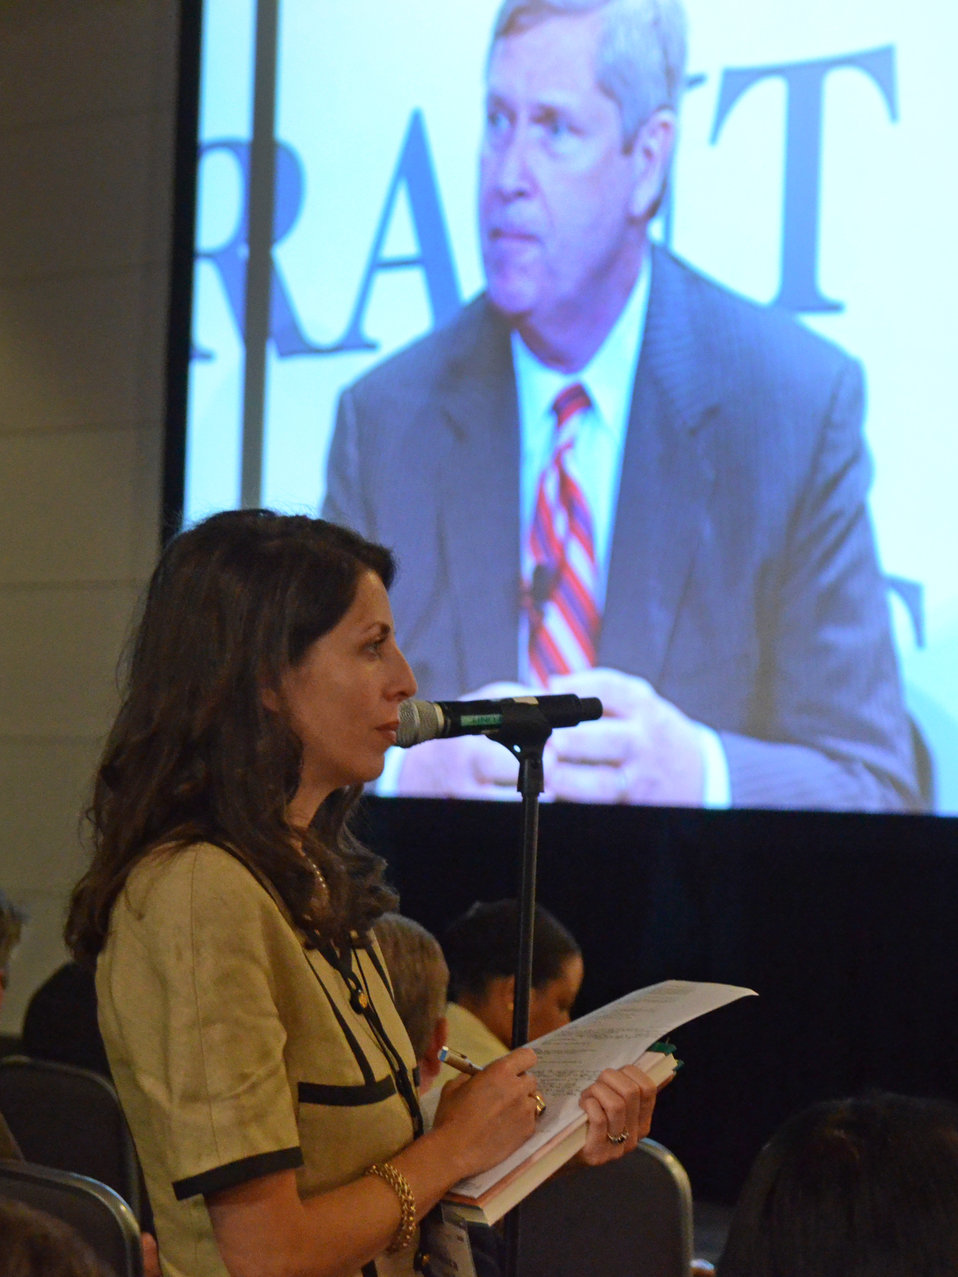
Agriculture Secretary Tom Vilsack answers a question during the Association of Land-Grant Universities (APLU) 150th Year Anniversary of the Morrill Act: Advancing the Legacy at the Ronald Reagan Building and International Trade Center in Washington D.C. on Tuesday, June 26, 2012.